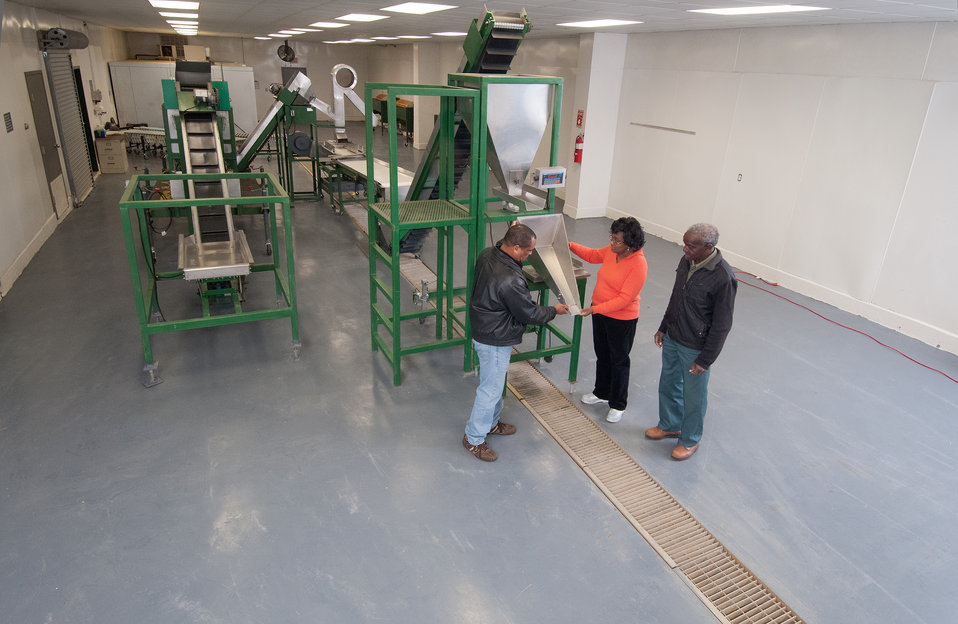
(L to R) University of Arkansas at Pine Bluff, Agriculture Demonstration Outreach Center in Marianna, AR representatives Ernest Bradley, Iris Crosby, and Leon Ellis discuss the operation of a purple hull pea processing equipment the Arkansas Delta Seeds of Change (ADSOC) was able to purchase with a U.S. Department of Agriculture (USDA) Rural Development (RD) Rural Business Enterprise Grant (RBEG) on Mar. 5, 2013. USDA in partnership Heifer International (an International organization whose mission is to work with communities to end hunger and poverty and care for the Earth) and various for-profit and non-profit organizations have put in motion the “Seeds of Change Implementation Plan” to use sustainable agriculture to build food systems in the Arkansas Delta. The program has evolved into the ADSOC Initiative. The ADSOC Initiative assists producers with technical assistance for crop production, management, harvesting, food security, value added products and marketing options and provides access to specialized production and marketing equipment.